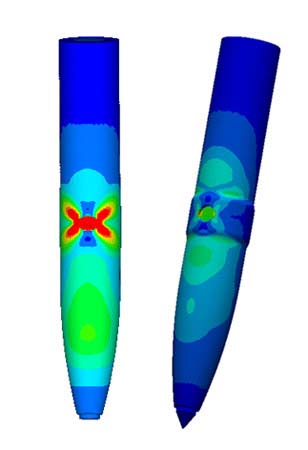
Computational analysis improves I-500 warhead survivability

The I-500 warhead's predicted deformation contours after penetration into hardened concrete for the original design (on left), and the Air Force Research Laboratory-proposed design (right).